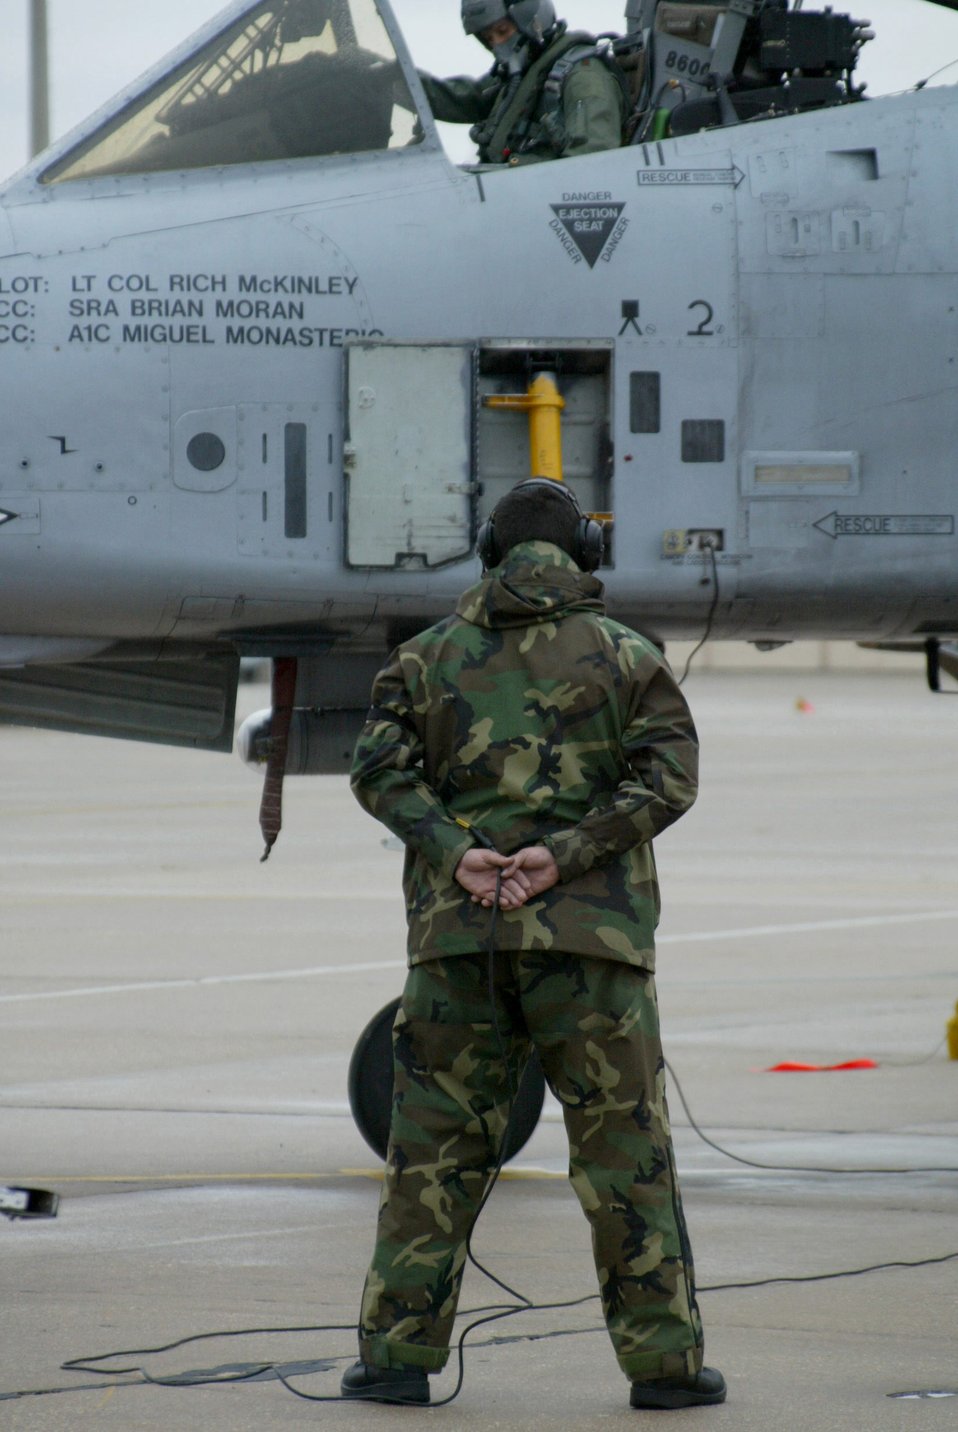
It's a dirty job, but...

POPE AIR FORCE BASE, N.C. (AFPN) -- Senior Airman Brian Moran waits for the pilot to complete pre-flight procedures before launching an A-10 Thunderbolt II. Airman Moran is a crew chief with the 23rd Aircraft Maintenance Squadron.